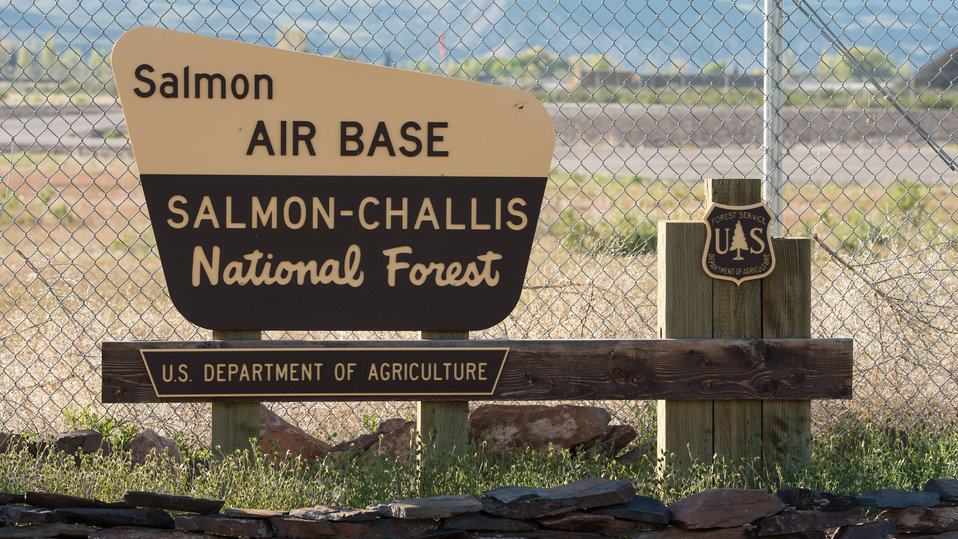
Veteran wildland firefighter rappellers come to train and prepare at the U.S. Department of Agriculture (USDA) U.S. Forest Service (USFS) National Helicopter Rappel Program’s Rappel Academy at Salmon Air Base in Salmon, ID on Wednesday, May 14, 2014. Firefighters learn the various roles of helibase operations and aerially delivered firefighters. From May 12, 2014, 72 veteran rappellers from all over the nation, 30 support staff, and three helicopters with flight crews attend the training at Salmon Air Base. Participants will rappel into the Perreau Creek area. The annual training is delivered in accordance with the National Rappel Operations Guide; strengthen leadership, teamwork, and communications within the rappel community, and produces quality aerial delivered firefighters for use in fire and aviation operations. The USDA Forest Service National Helicopter Rappel Program’s primary mission is initial attack. Rappel crews may be utilized for large fire support, all hazard incident operations, and resource management objectives.